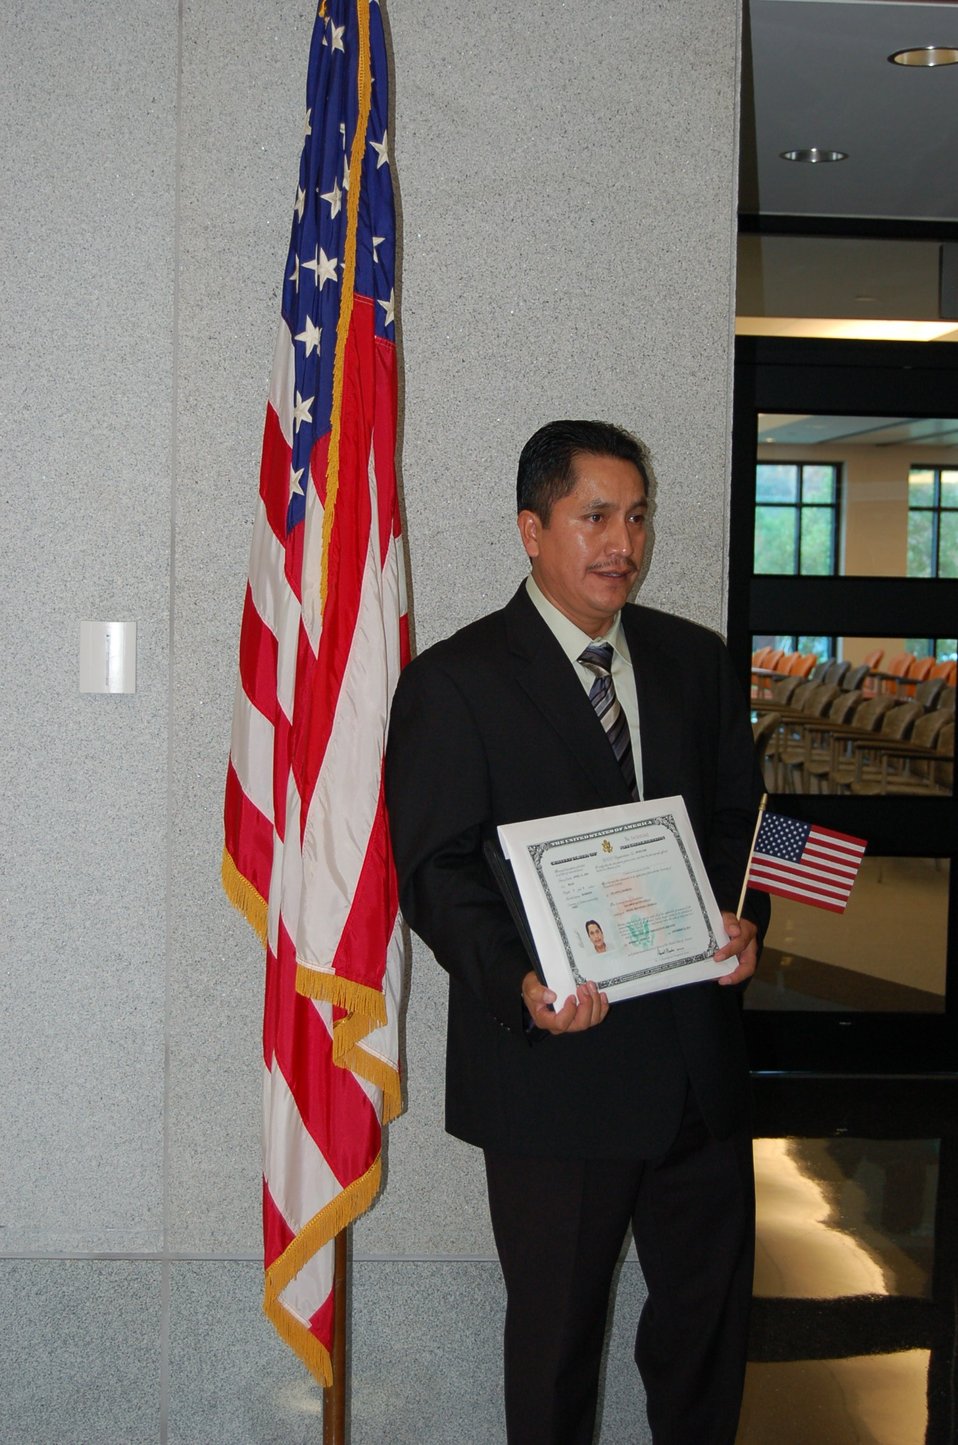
New Citizens